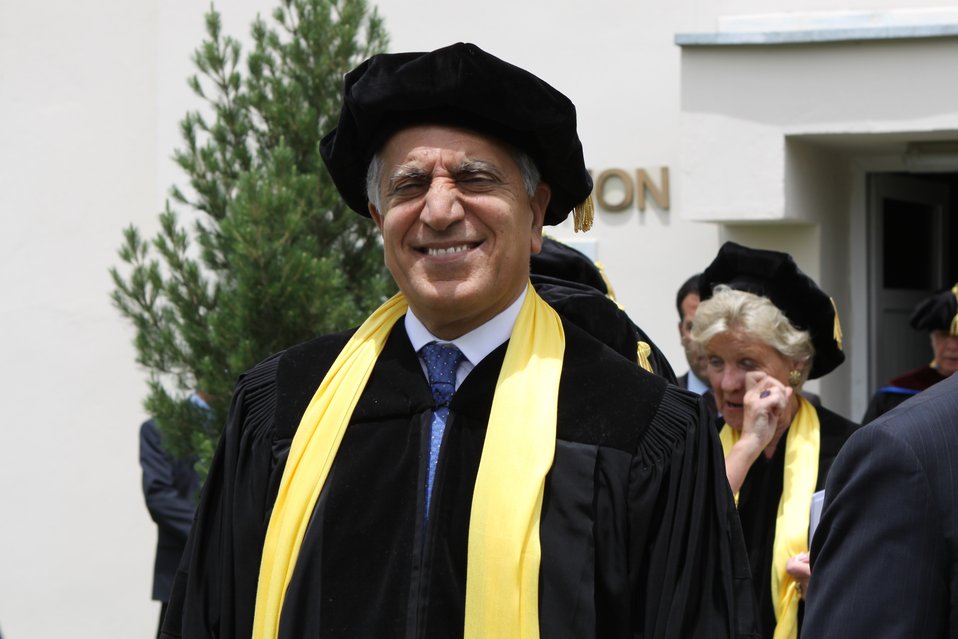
100526 AUAF Graduation 324